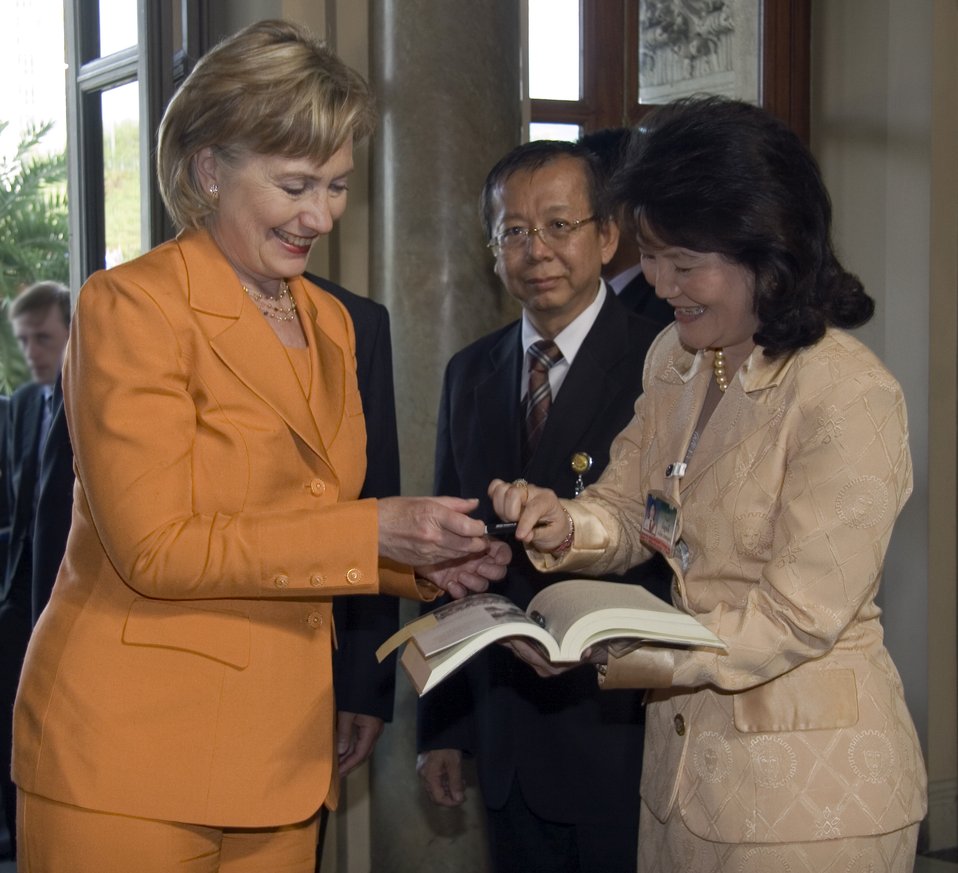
Secretary Clinton at Government House in Bangkok

U.S. Secretary of State Hillary Rodham Clinton autographs a book for Anchalee Vanich, Deputy Secretary General to the Prime Minister as she enters the Government House in Bangkok, Thailand July 21, 2009.